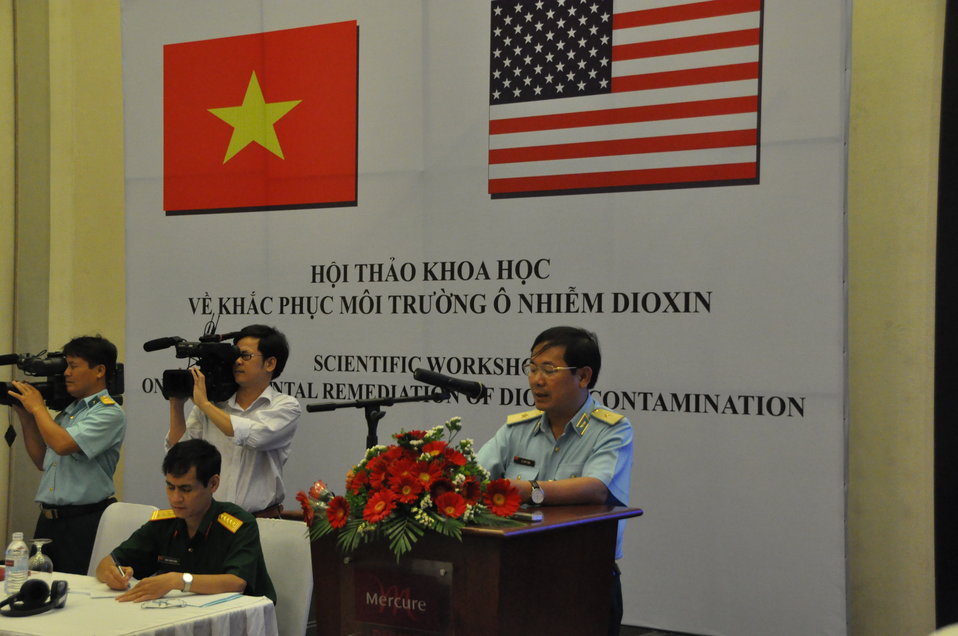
Scientific Workshop on Environmental Remediation of Dioxin Contamination at Danang Airport

August 8, 2012